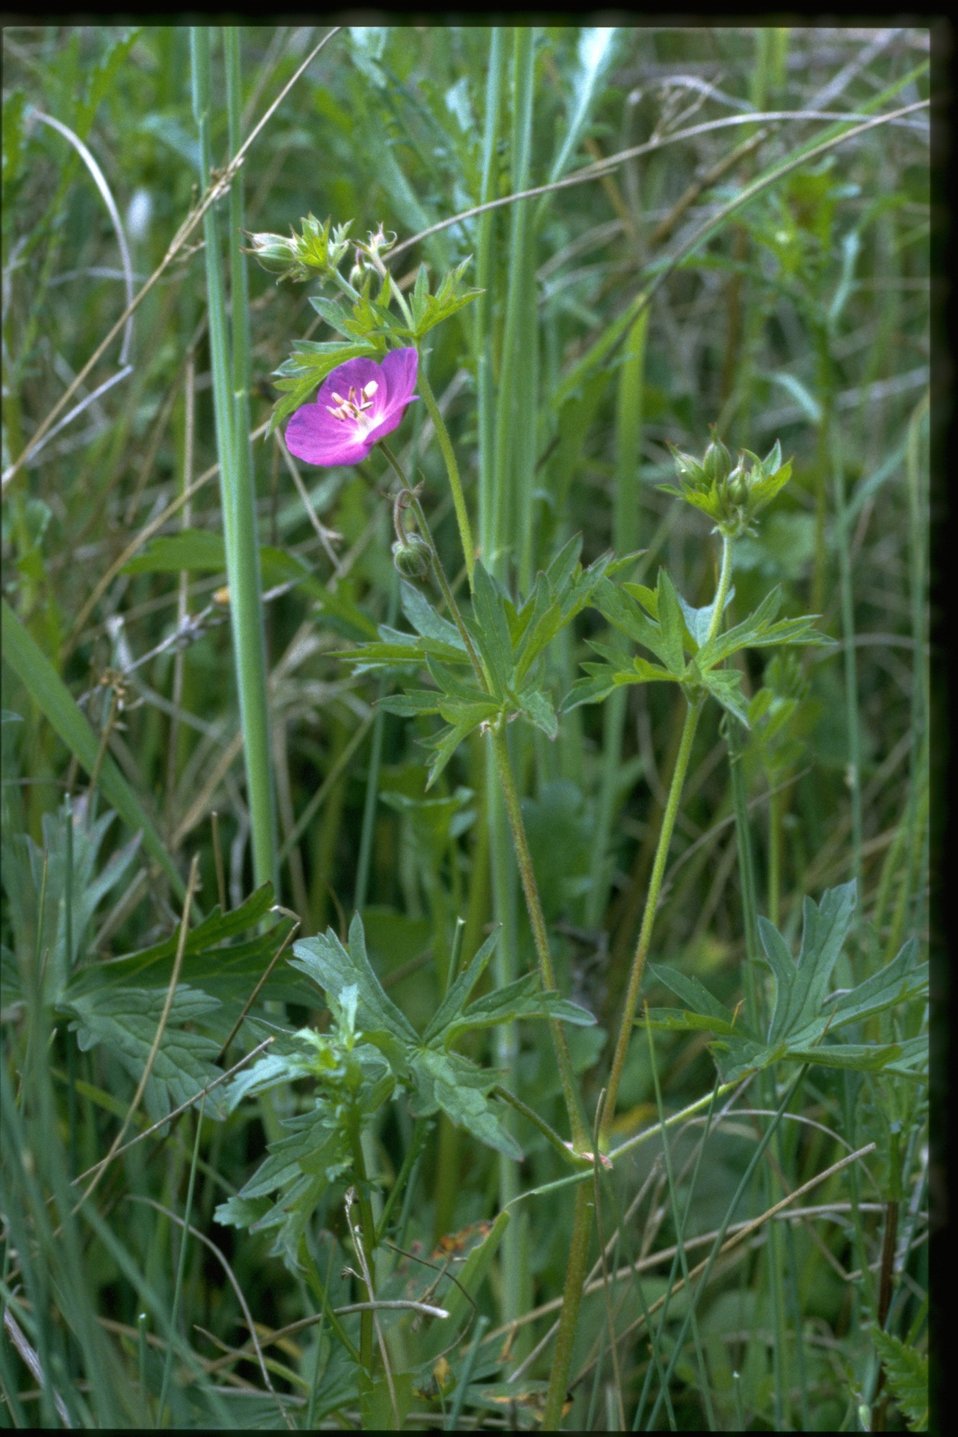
Medium shot of Geranium oreganum.